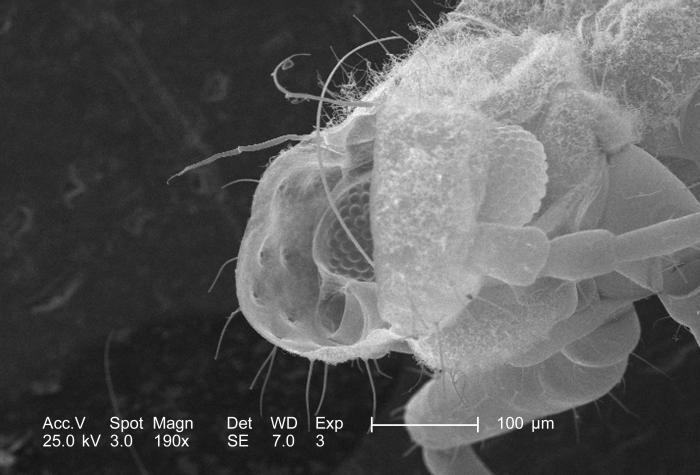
At a magnification of 190x, this scanning electron micrograph (SEM) revealed the presence of a small, unidentified insect on the exoskeletal surface of what was an unidentified dragonfly that was found deceased on the grounds of the Decatur, Georgia suburbs. Though the arthropod found here appeared to be 'residing' on the dragonfly's body, it also may merely have been picked up by the dragonfly, as was the case with other debris such as pollen granules, or general vegetative matter, and not living as a parasitic inhabitant.